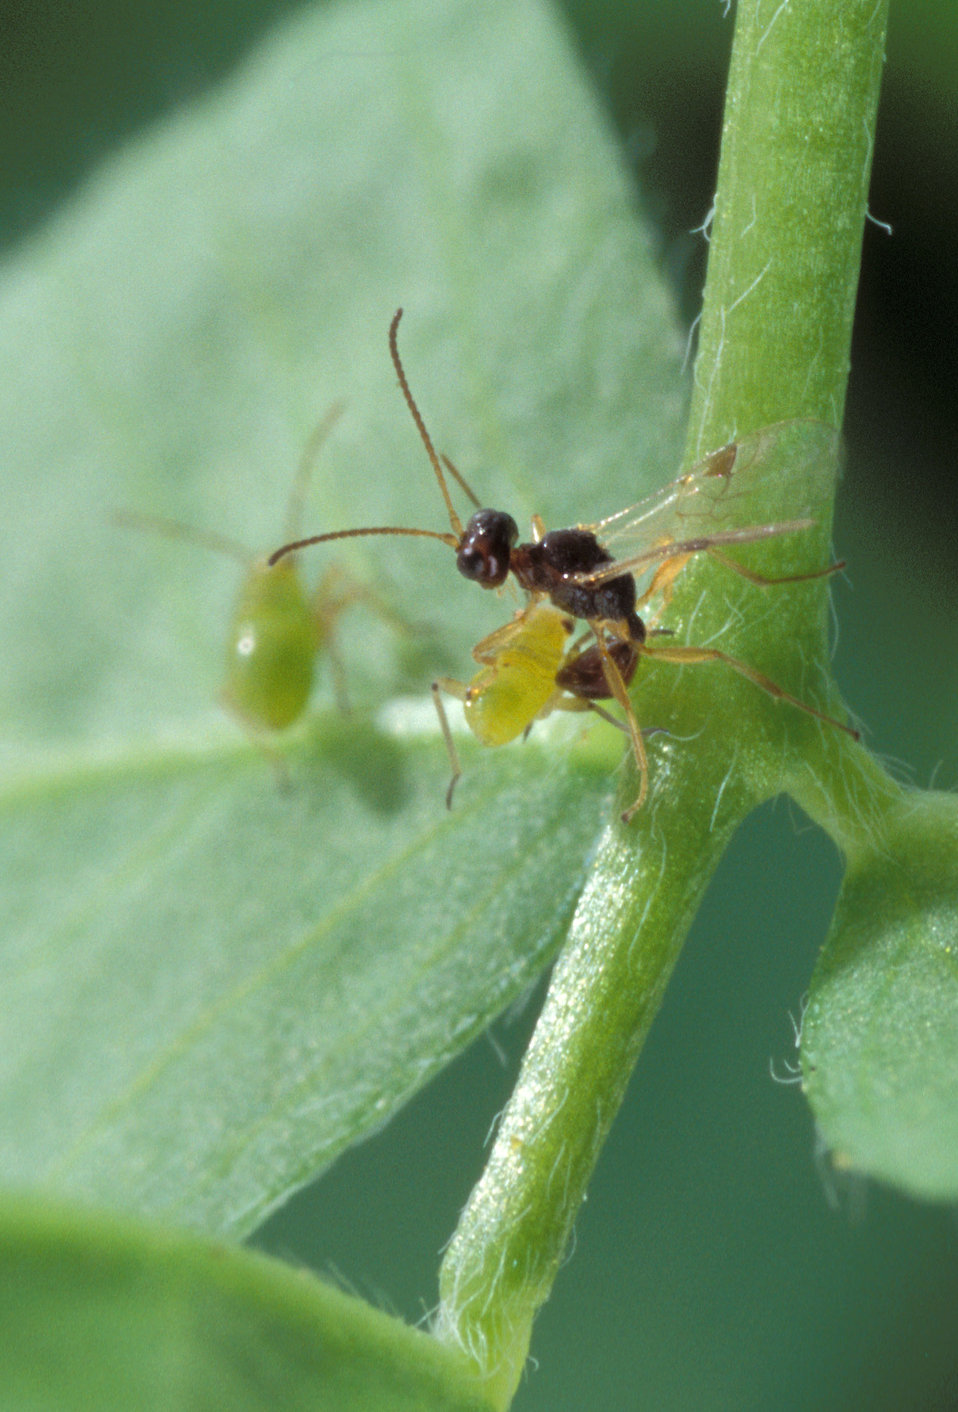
A quarter-inch-long parasitic wasp (Peristenus digoneutis) prepares to lay an egg in a tarnished plant bug nymph.